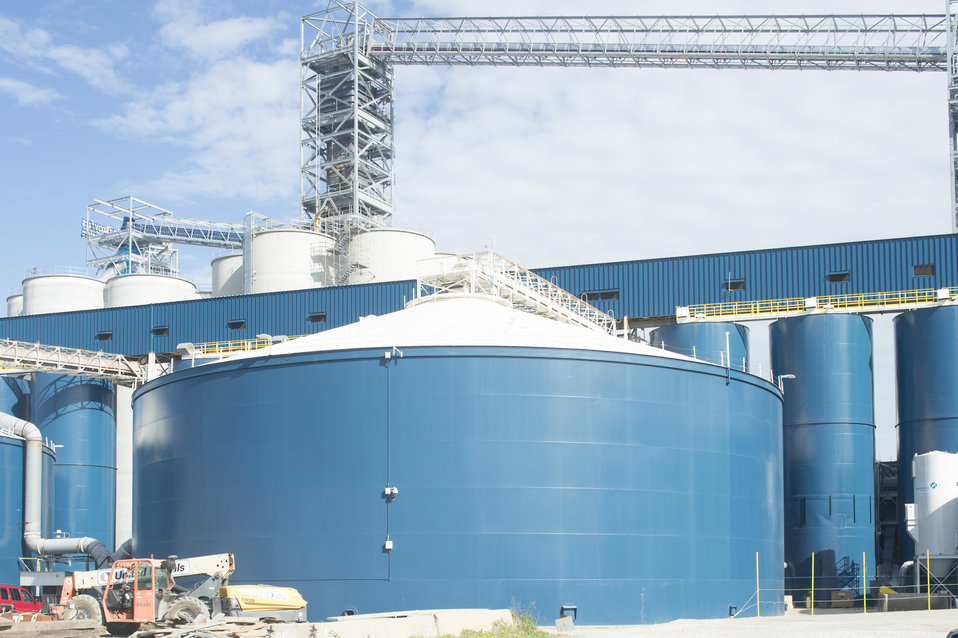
Grain is transferred from barges to holding tanks and tested in preparation for export near the port of New Orleans, LA on Tuesday, Nov. 19, 2013.